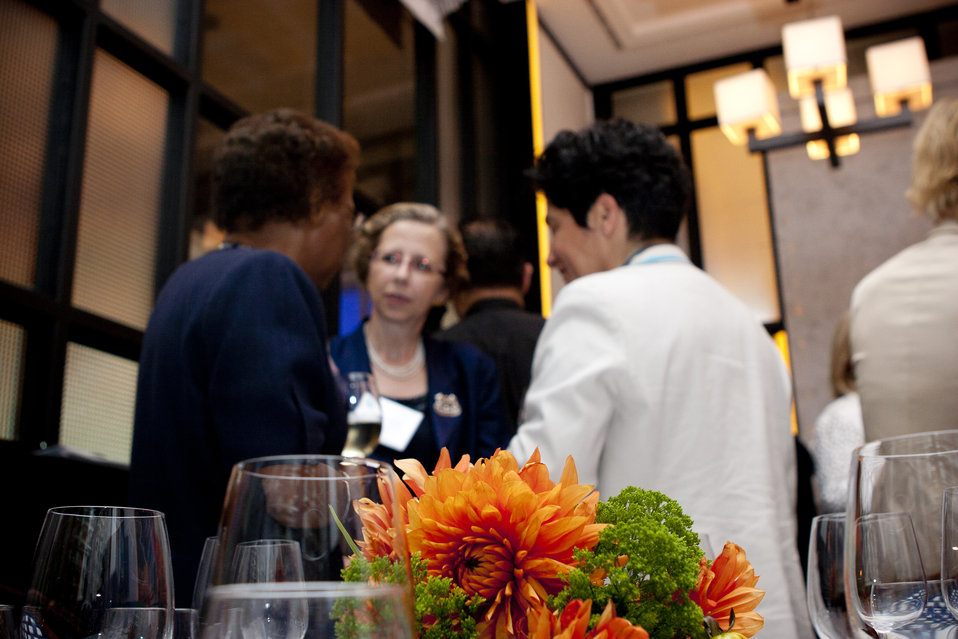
WomenandEnergy 35